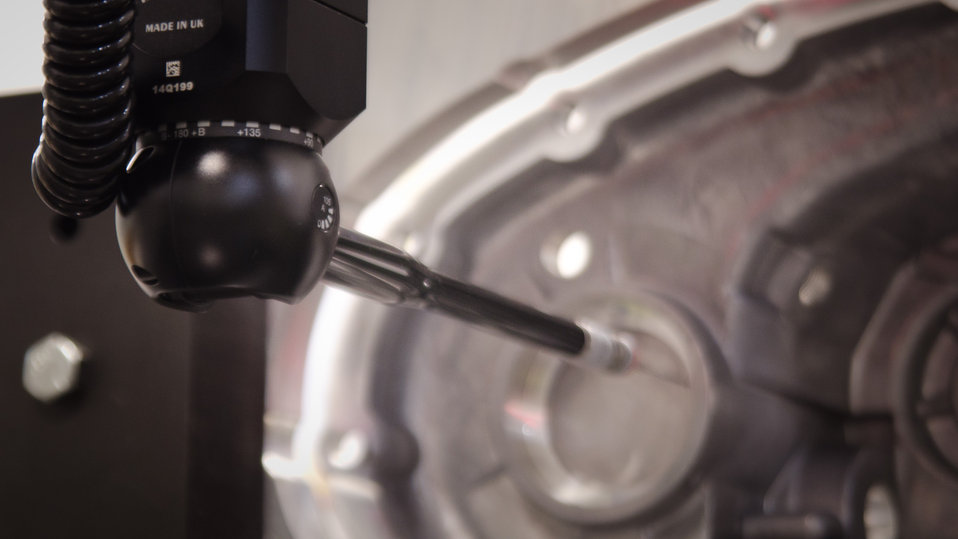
A robotic laser aligned device provides precision measurements across multiple surfaces of a cast and machined product made at Port City Group’s Port City Castings Corporation who manufactures high-pressure aluminum die-castings, mostly for the automotive industry, in Muskegon, MI, facility on Wednesday July 20, 2011. Port City Group boosted its employment by 12 percent over last year thanks to two Rural Business Guaranteed Loans totaling $9.6 million. In its 80,000 sq. ft. facility, machines that range from 800 – 1,600 tons, and cast A380 aluminum alloy products from melted ingots of aluminum, into automotive components of U.S.A. made vehicles. The process features a variety of robotic presses; computer controlled machining; quality control facility; and complete measurement and testing laboratory. In 2009 banks were backing out of loans for PCG equipment purchase agreements. The U.S. Department of Agriculture (USDA) loan guarantee helped make the loan possible with its guarantee. PCG obtained the needed robotic and other equipment. This resulted in a stable workforce that has since grown. When asked about their USDA experience, Port City Group Sales Manager Laura LaGuire said, “It was great! They were very helpful. Everything that came up was handled smoothly, the money came in place when it was needed, and it was a very smooth transition.”